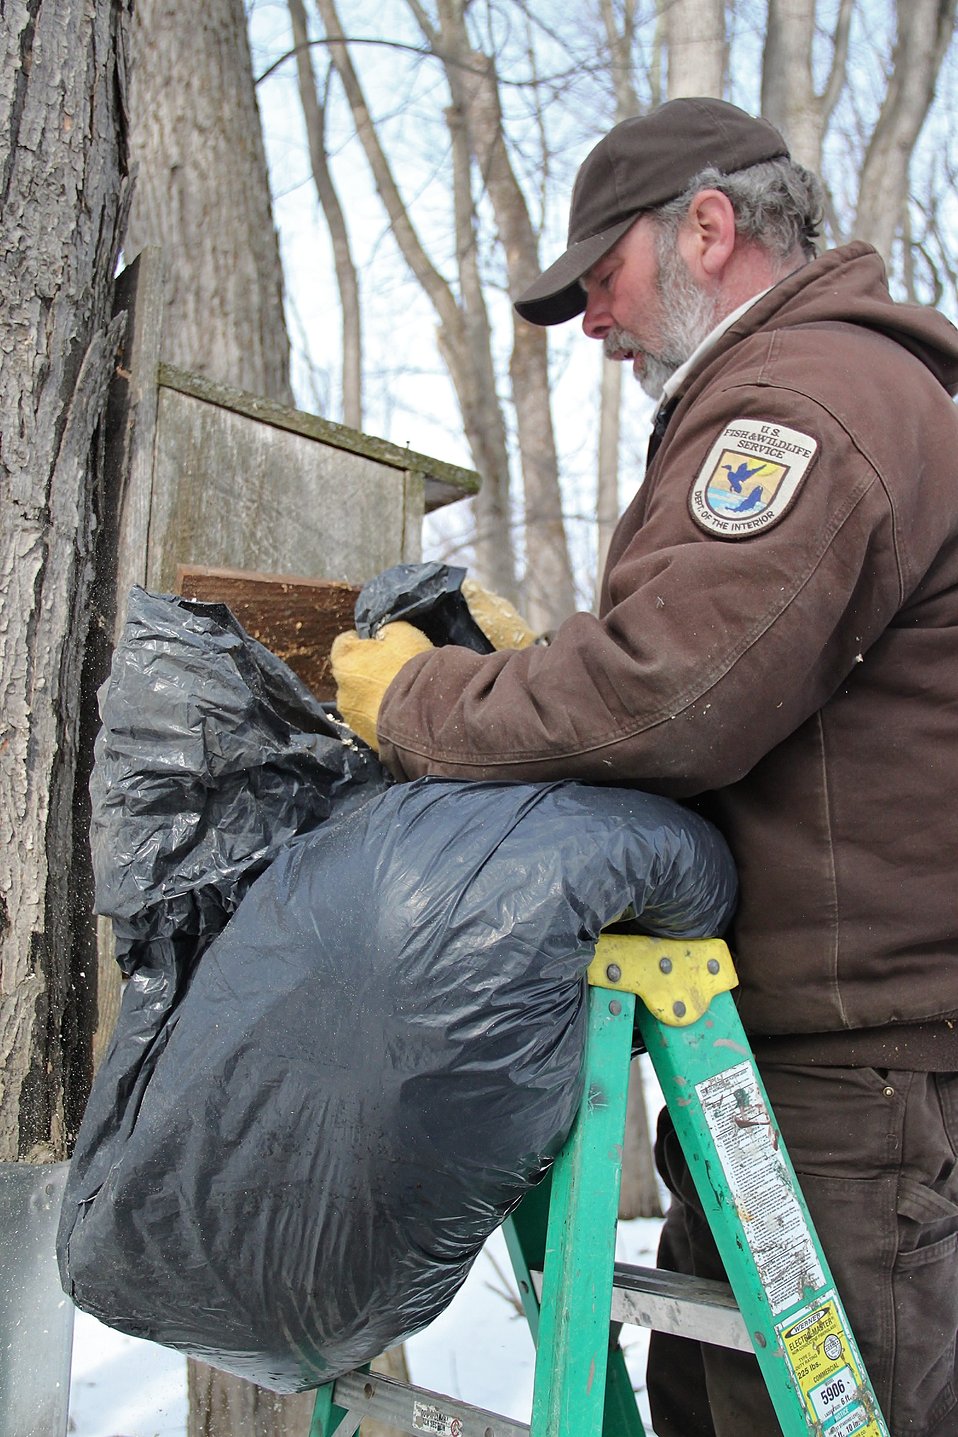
Nest Box Maintenance

Maintenance mechanic Joe Bertrnad Maintains wood duck boxes at Missisquoi National Wildlife Refuge.